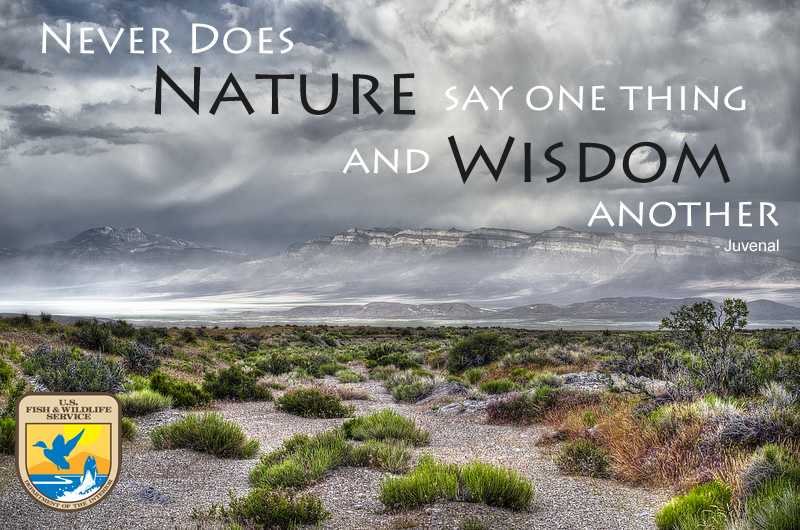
Nature and Wisdom